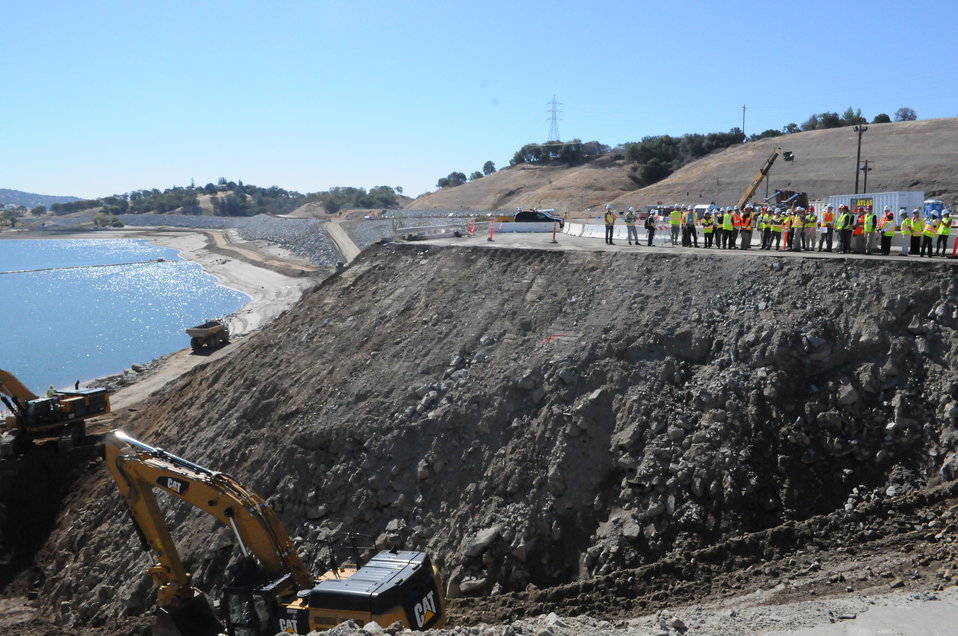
Central Valley Flood Protection Board visits new Folsom Dam spillway

Central Valley Flood Protection Board members and other Folsom Dam auxiliary spillway project partners tour the spillway project construction site Sept. 27, 2013 in Folsom, Calif. Preparation work, shown, is to eventually connect the lake with the spillway.